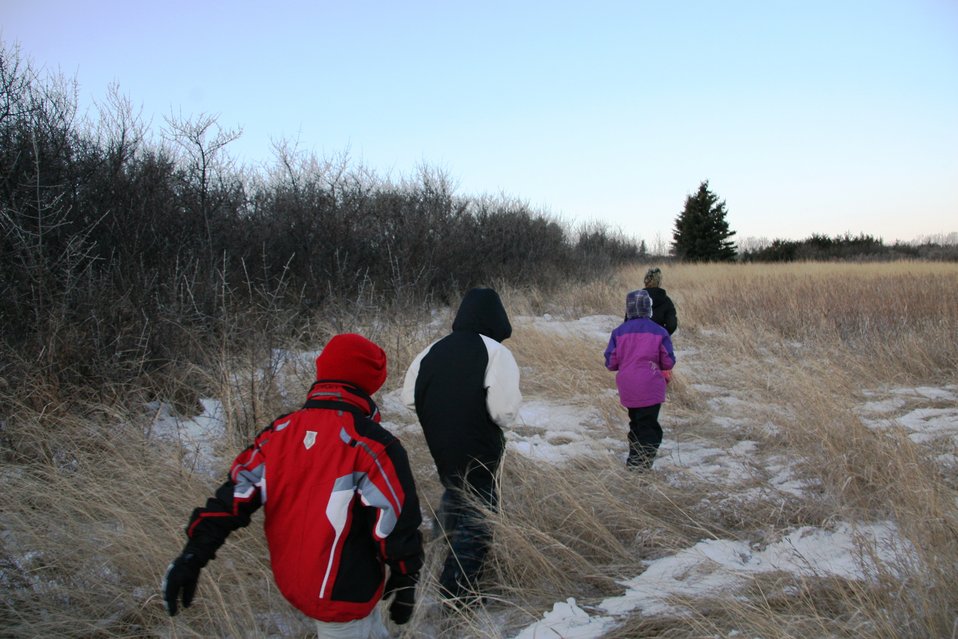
Hiking During Bird Walk

Participants were able to cover various habitats during their walk - trees, shrubs, and mixed-grass - and learned that different types of birds use different types of habitat.